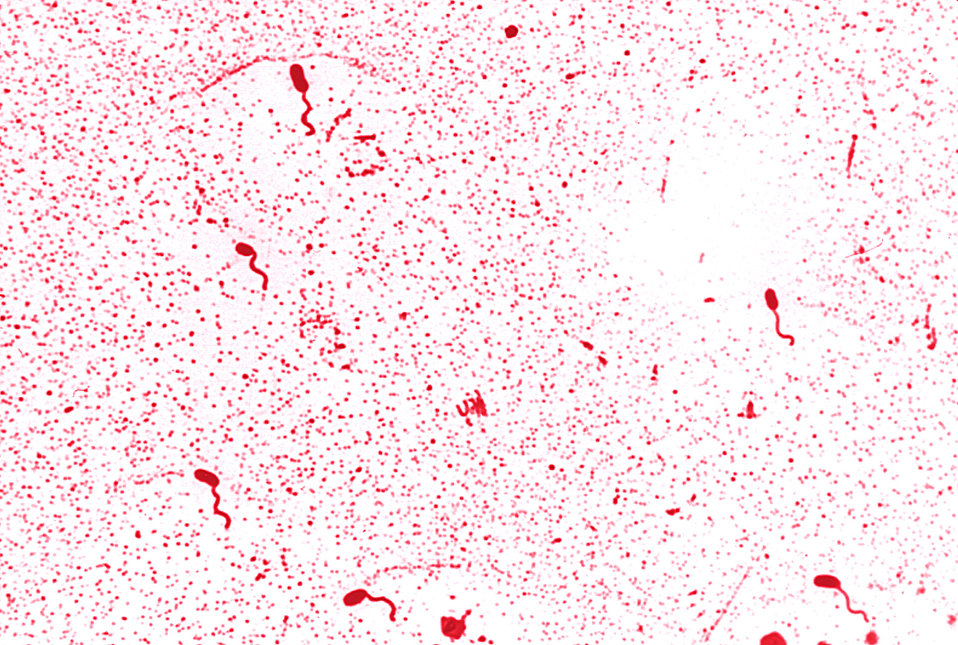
Vibrio cholerae. Leifson flagella stain (digitally colorized).